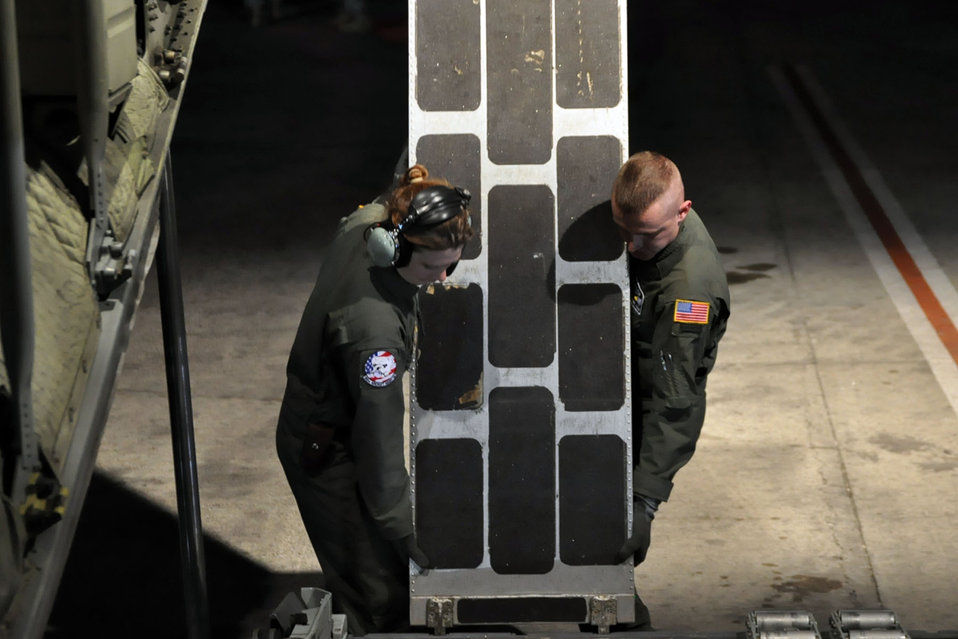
Medical mission to Haiti

Senior Airman Jessica Strumbly and Staff Sgt. Michael Culp remove a loading ramp from the rear cargo platform of a C-130H Hercules on the tarmac at Toussaint L'Ouverture International Airport in Port-au-Prince, Haiti, Jan. 18, 2010. Airmen Strumbly is a crew chief with the 910th Aircraft Maintenance Squadron, and Sergeant Culp is a loadmaster with the 773rd Airlift Squadron.